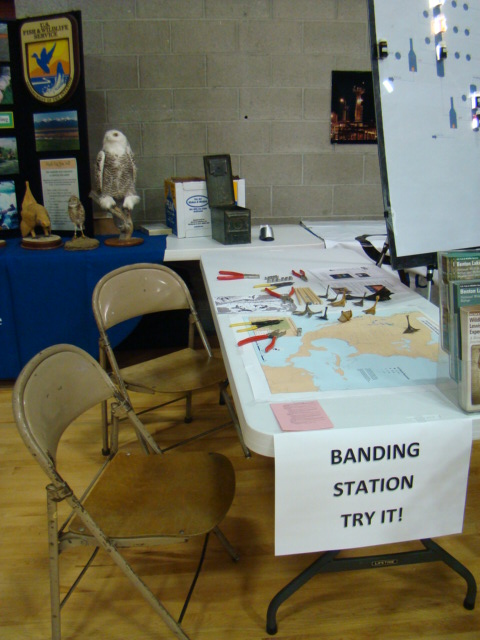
Great Falls STEM Expo

Every spring Benton Lake NWR participates in the Great Falls STEM (Science, Technology, Engineering, Math) Expo. We set up a booth complete with pictures, furs, skulls, animals, and even a duck banding station!